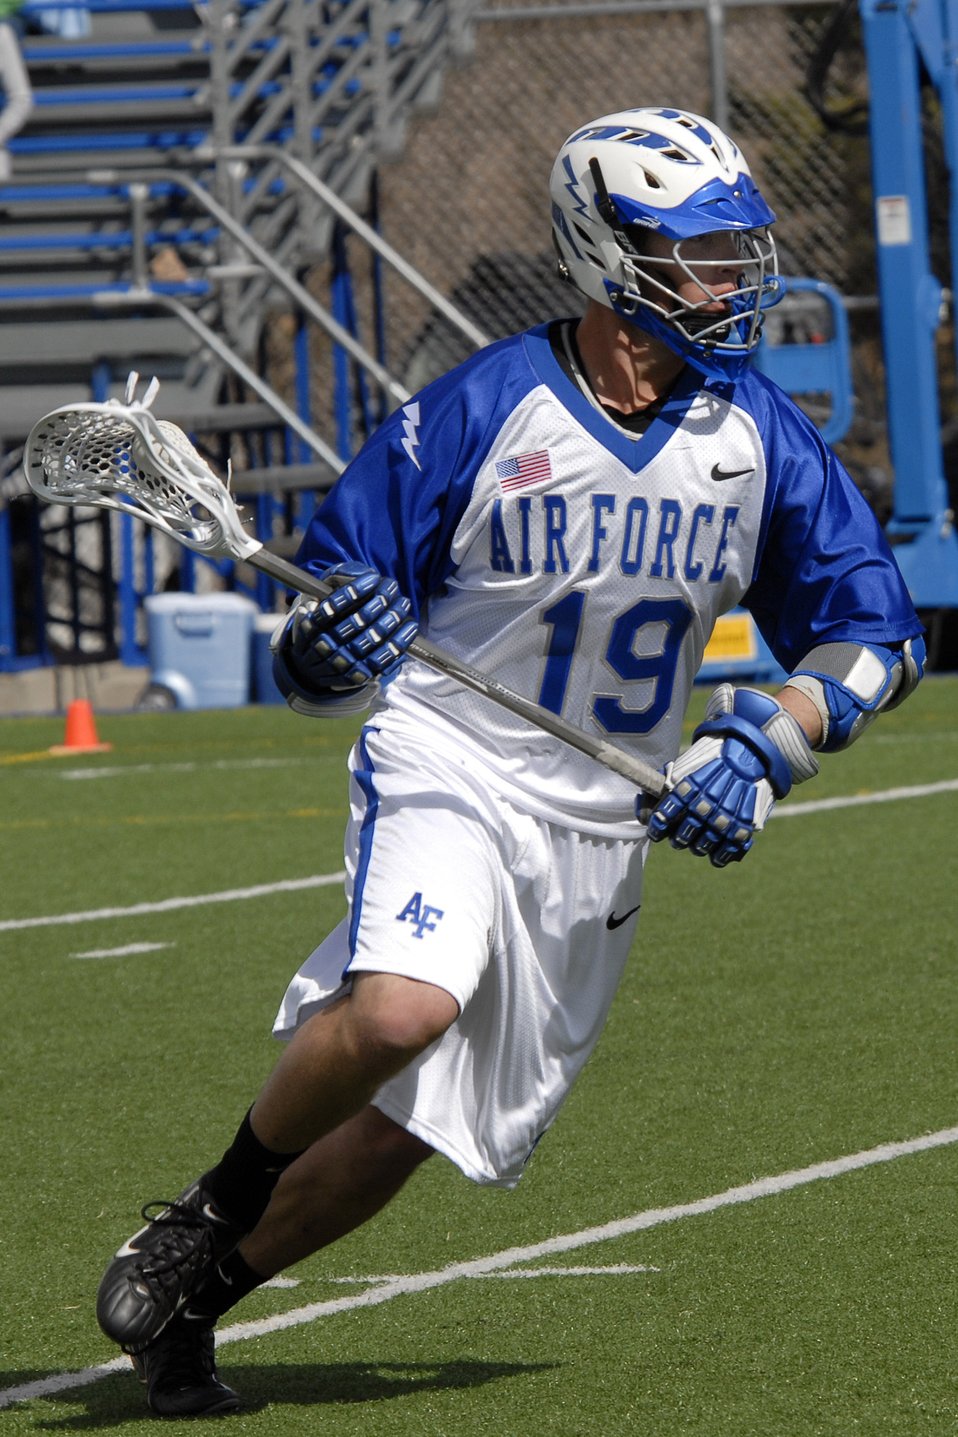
Falcons pick up 12-4 victory over Presbyterian

Air Force Academy junior midfielder Brian Massa looks upfield as he moves towards the visitor's goal. In this lacrosse game March 25 Air Force defeated Presbyterian College 12-4 at the Cadet Lacrosse Stadium in Colorado Springs, Colo. The Falcons, undefeated at home, move to 2-4 on the season.